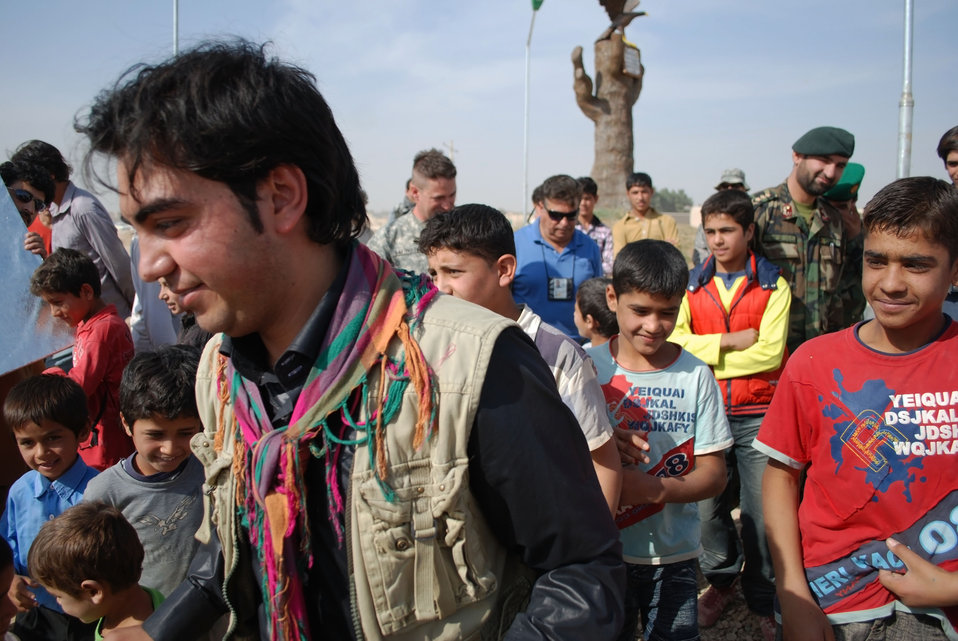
'On the Road' in Balkh Province